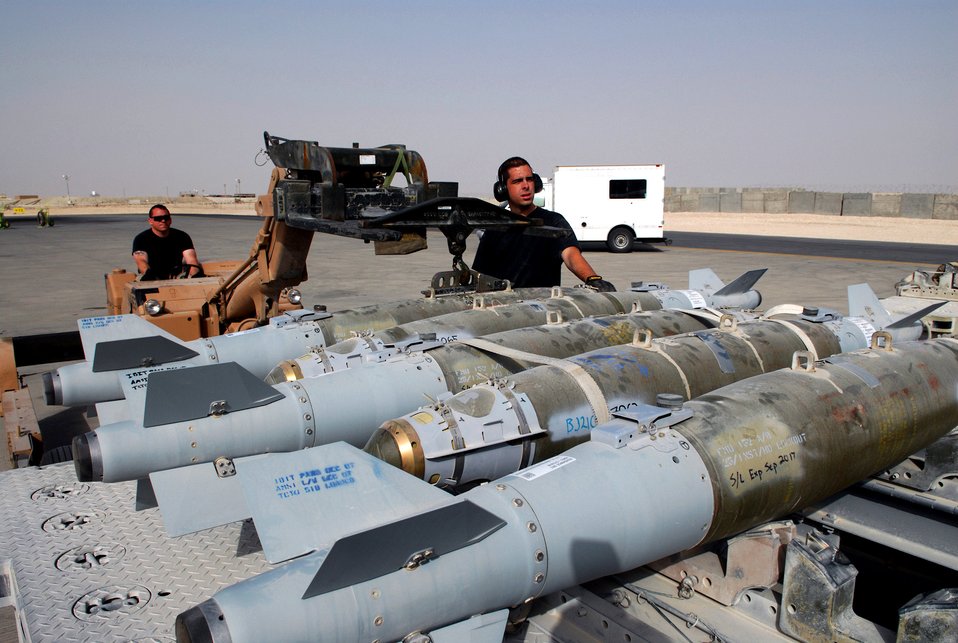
Time to reload

Senior Airman Brett Williamson guides Staff Sgt. Greg Eaton as they prepare to move ordnance to load on a B-1B Lancer Jan. 10 at an air base in Southwest Asia. Both Airmen are assigned to the 379th Expeditionary Maintenance Squadron.